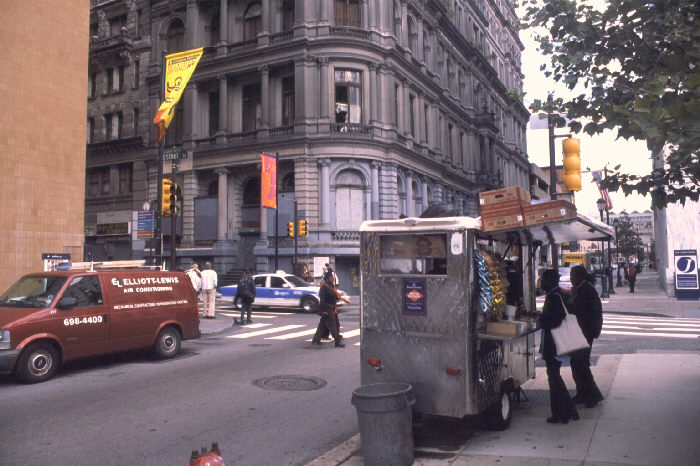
Sidewalk food vending stand with customers. Philadelphia, Pennsylvania.